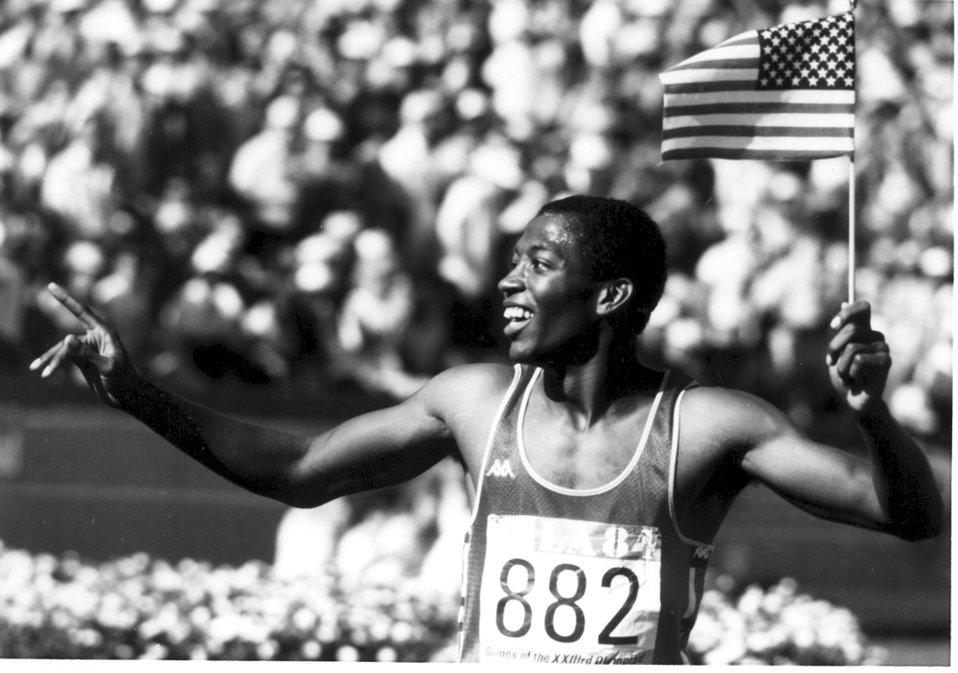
Academy announces inaugural class into athletic hall of fame

Alonzo Babers, a 1983 Air Force Academy graduate, holds the academy record in the 400-meter, 300-yard and 500-yard dashes. He is in the inaugural class for induction into the Air Force Academy Athletic Hall of Fame.